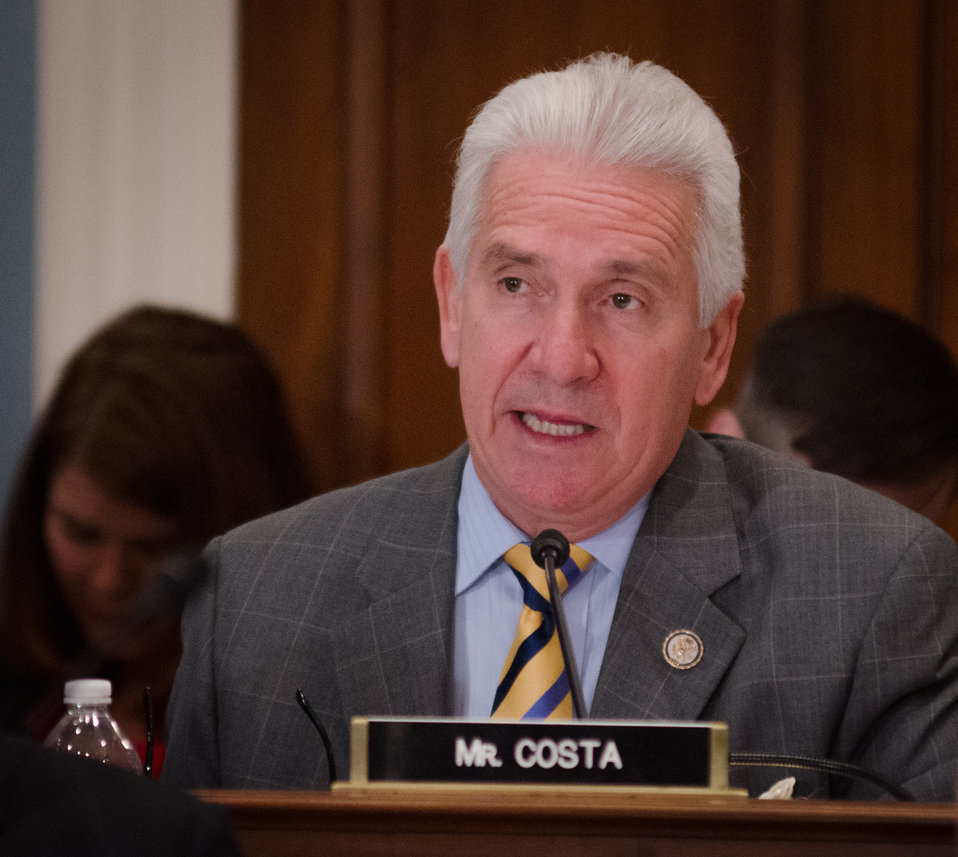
Representative Jim Costa (CA) questions Agriculture Secretary Tom Vilsack, not seen, during his testimony before the House Agriculture Committee regarding the “State of the Rural Economy“ at the Longworth House Office Building in Washington, D.C. on Tuesday, Mar. 5, 2013.